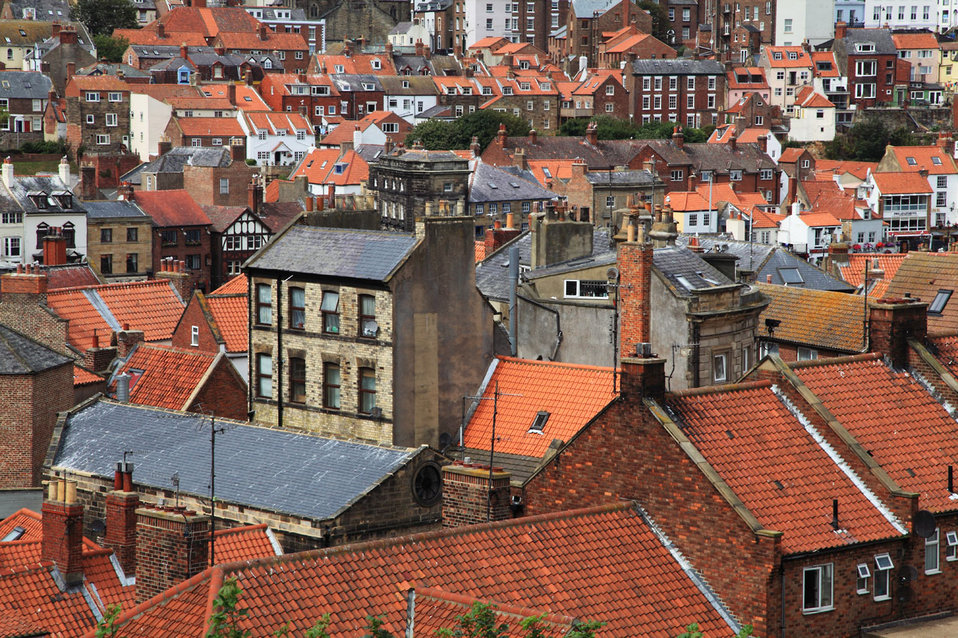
Town houses

Houses everywhere in a small town - whitby.